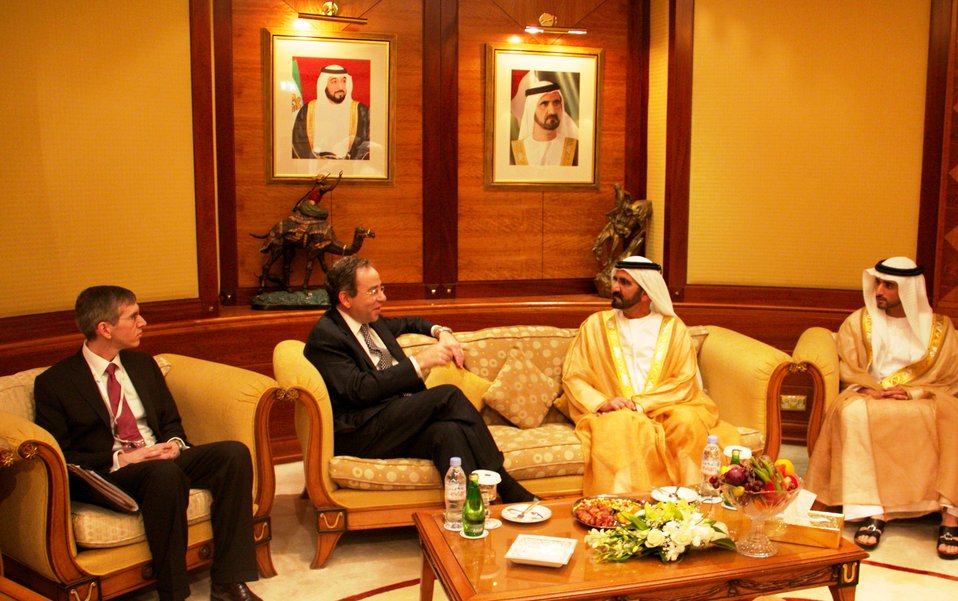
Deputy Secretary Nides and Consul General Waller Meet With the Ruler of Dubai

Deputy Secretary of State Thomas Nides, center left; and U.S. Consul General to Dubai Rob Waller, left; meet with the Ruler of Dubai, Sheikh Mohammed bin Rashid Al Maktoum, during the Global Entrepreneurship Summit (GES) in Dubai, United Arab Emirates, December 12, 2012.